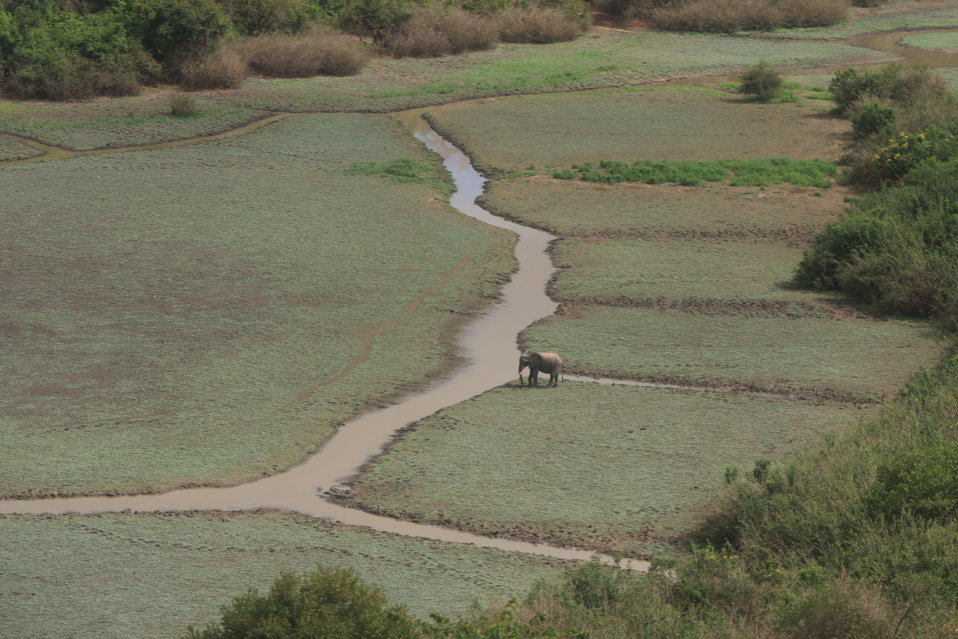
Threats to elephants

The Selous was once home to as many as 70,000 elephants, but recent estimates indicate the population here may have dropped to 30,000 due to poaching for ivory.